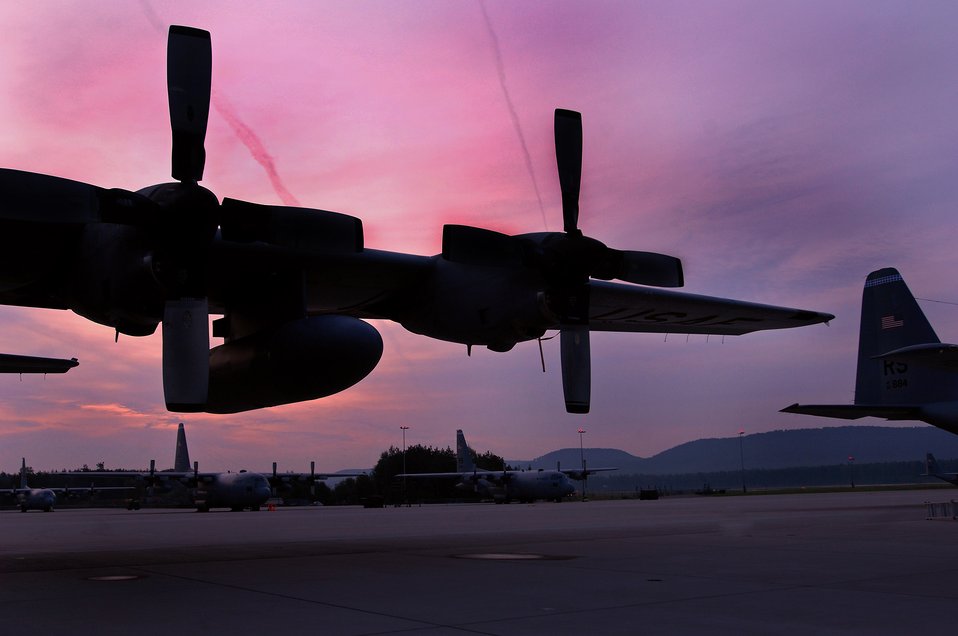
Underneath painted sky

The sun rises over a prepped C-130 Hercules aircraft ready for daily missions at Ramstein Air Base, Germany, Sept. 18. The Ramstein flightline is one of the busiest in the Air Force, launching more than 40 aircraft each day.